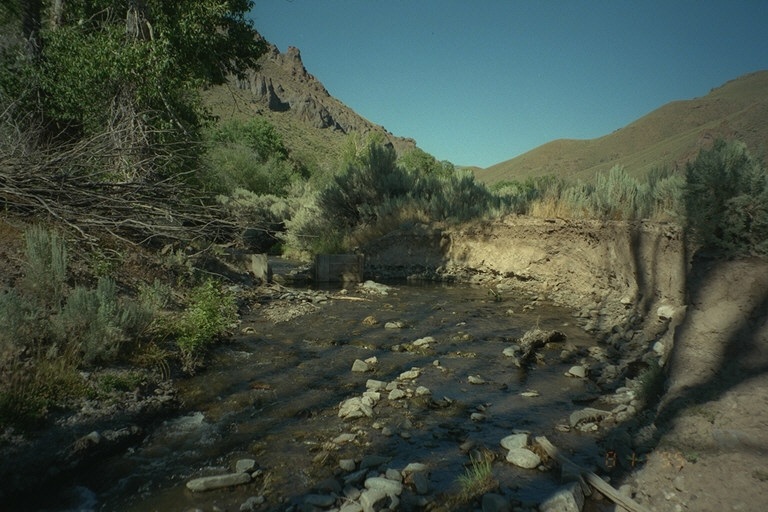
Riparian area Public Lands Salmon Field Office UCSC Upper Columbia Salmon Clearwater District